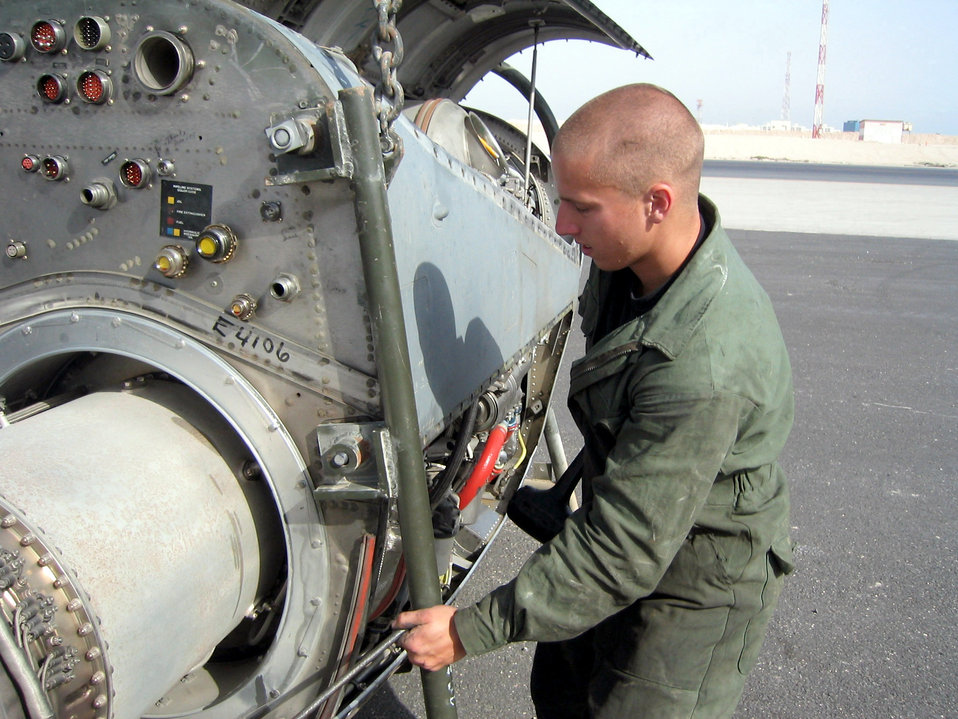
Engine swap

OPERATION IRAQI FREEDOM -- Airman 1st Class Adam Whitehurst changes an engine on a C-130 Hercules at an air base in Southwest Asia. He is an engine specialist from Pope Air Force Base, N.C., and deployed to the 64th Air Expeditionary Wing.